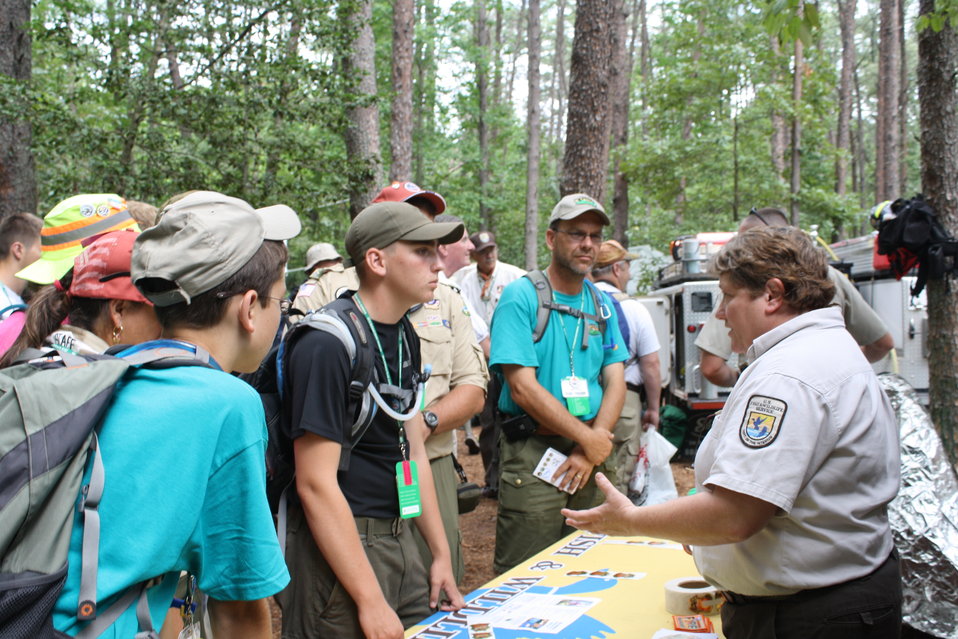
Boy Scout Jamboree 2010